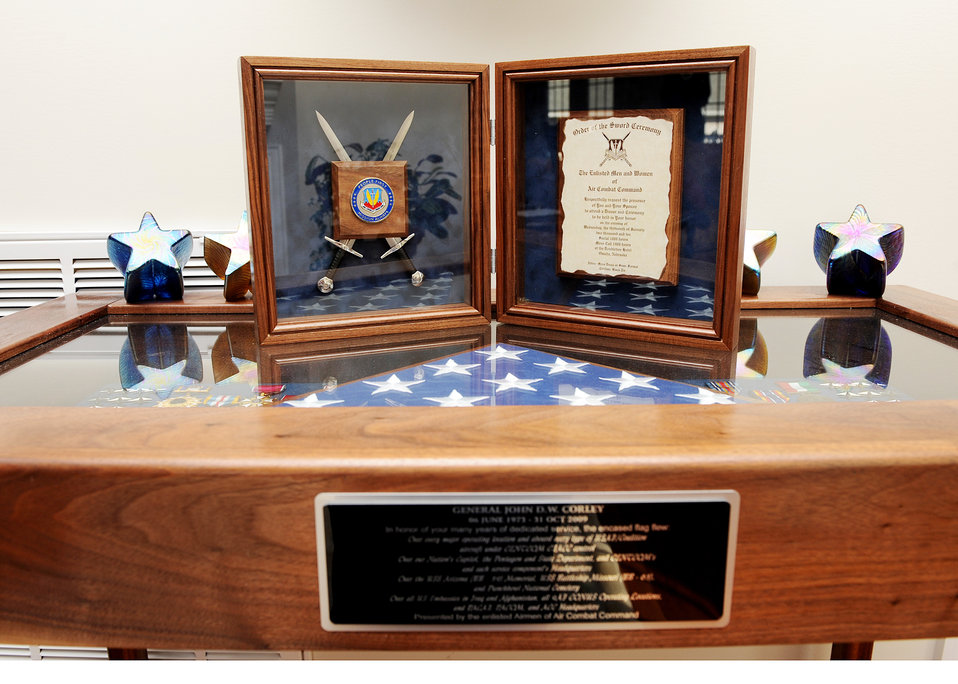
General to receive Order of the Sword

Retired Gen. John D. W. Corley displays his Order of the Sword induction ceremony invitation atop a shadow box he received during his retirement ceremony in September. The Order of the Sword induction ceremony, which is the highest honor enlisted men and women can bestow upon an officer, is set for Jan. 13 in Omaha, Neb. General Corley is the former commander of Air Combat Command.